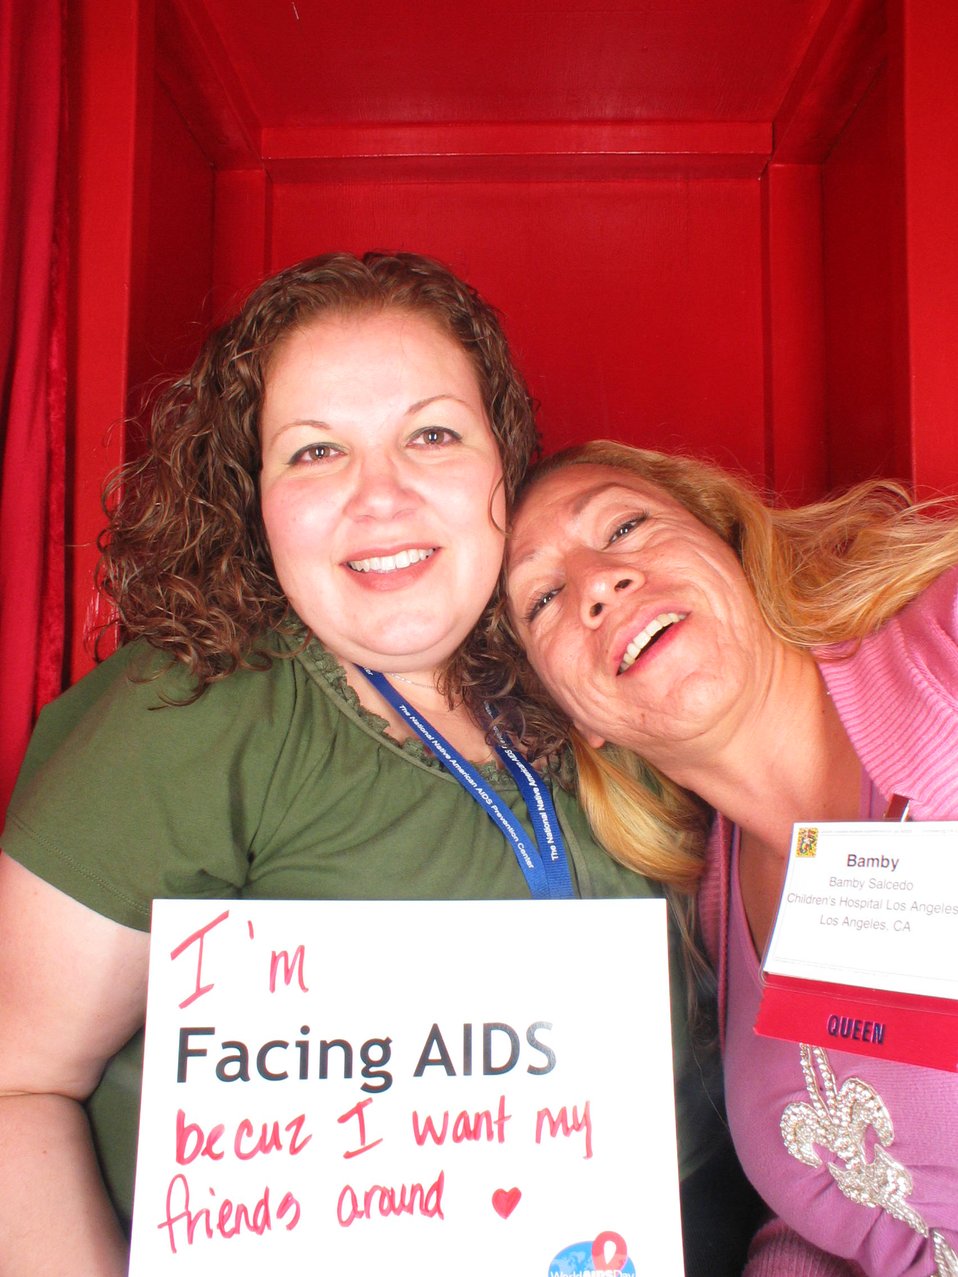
I'm Facing AIDS because I want my friends around